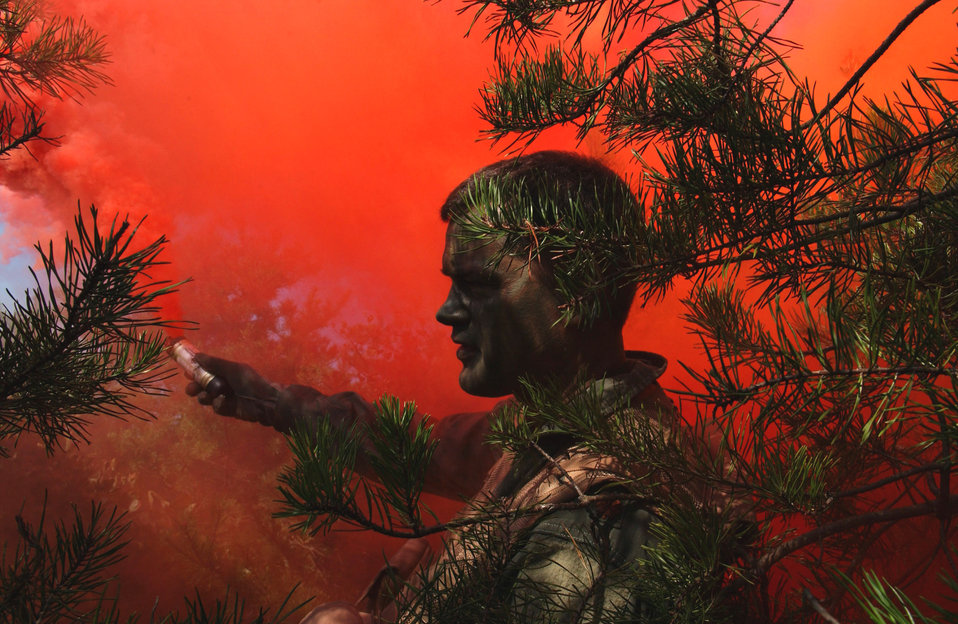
Life-saving training at Osan AB

Maj. Paul Neidhardt sets off a flare during combat search and rescue training Sept. 21 near Osan Air Base, South Korea. Annual training is conducted by survival, evasion, resistance and escape instructors to reacquaint aircrew members with combat search and rescue procedures and techniques.